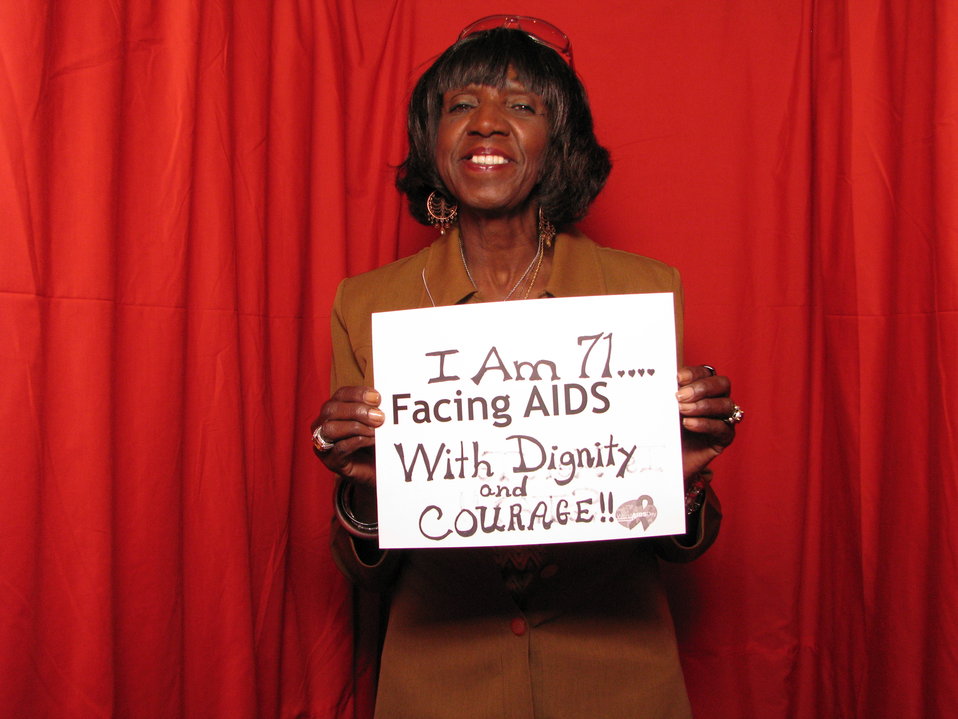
I am 71... FACING AIDS with Dignity and Courage!!

From the AIDS.gov photo booth at the U.S. Conference on AIDS, September 2010 (Orlando, FL).